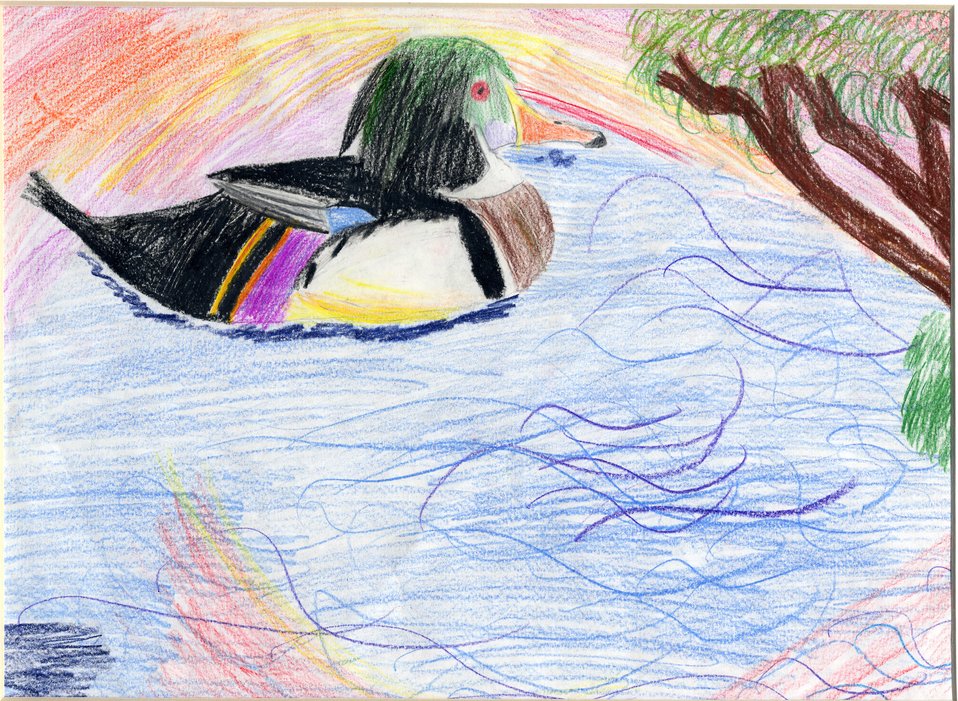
DC

2012 Jr Duck Stamp Program
State Best of Show
District of Columbia